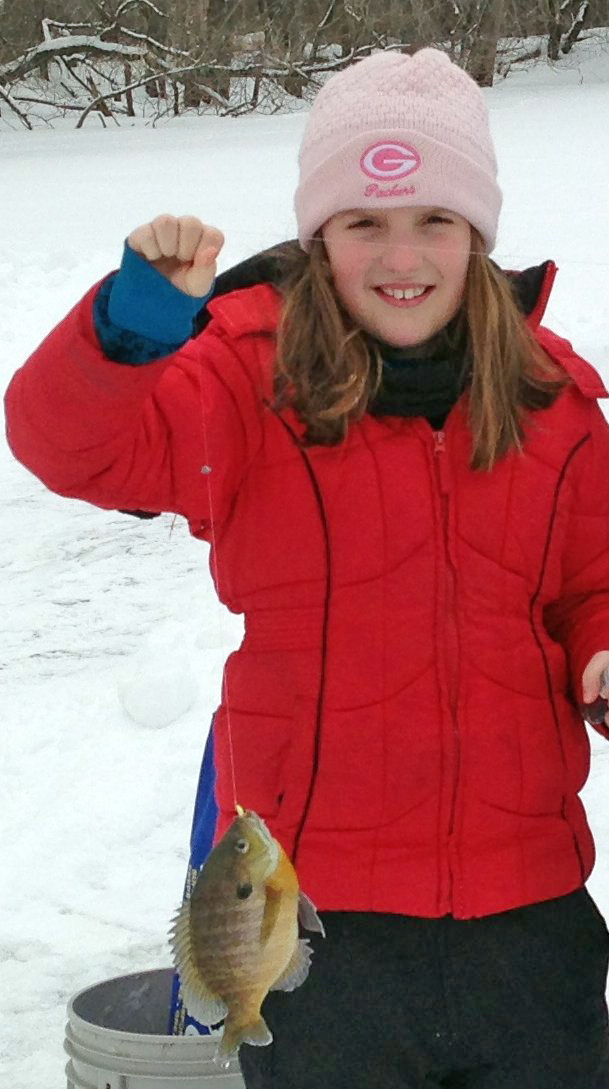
Second Catch of the Day

A young participant in the annual youth ice fishing event held on the Upper Mississippi River National Wildlife and Fish Refuge – Winona District shows off her catch.